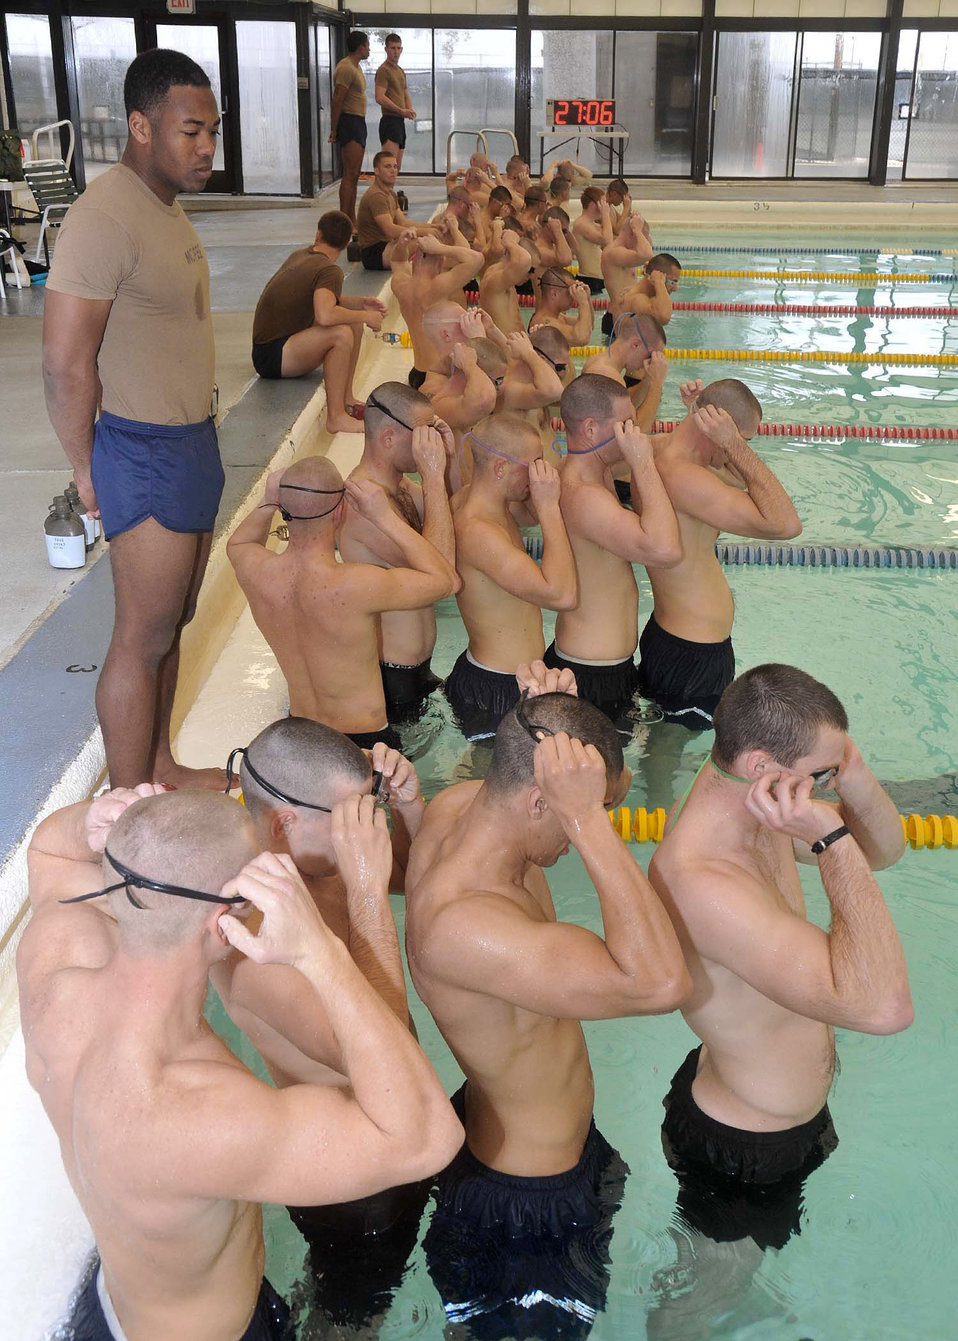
New element assists special forces trainees

Air Force basic military trainees participate in a swim training session Jan. 28, 2011, at Lackland Air Force Base, Texas. Swim training is part of the new Battlefield Airman Technical Training Liaison Element designed to improve success rates of battlefield Airmen career fields.